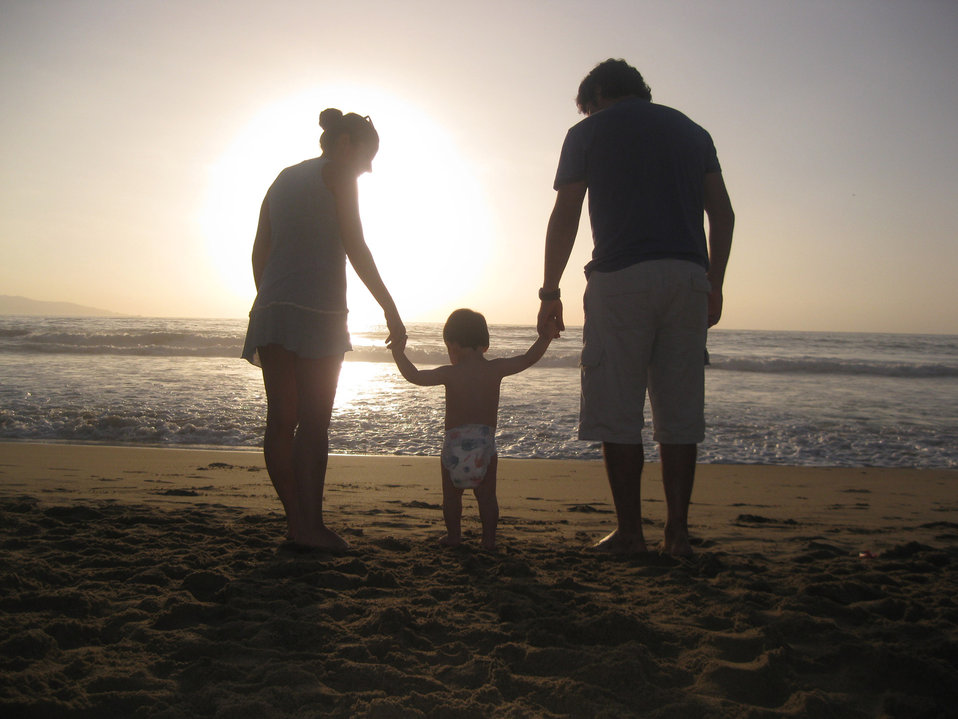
Family together hand in hand.